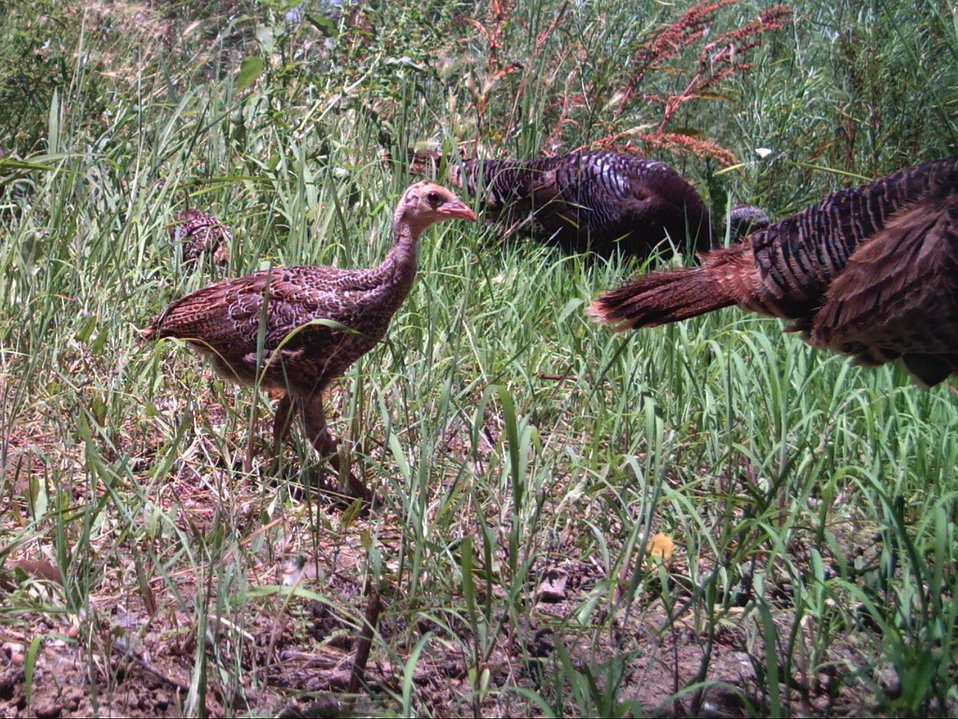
wild turkey poult

Bosque del Apache National Wildlife Refuge, NM
Camera trap project by Matthew Farley, Jennifer Miyashiro and James Stuart
Photo made available by J.N. Stuart, Creative Commons